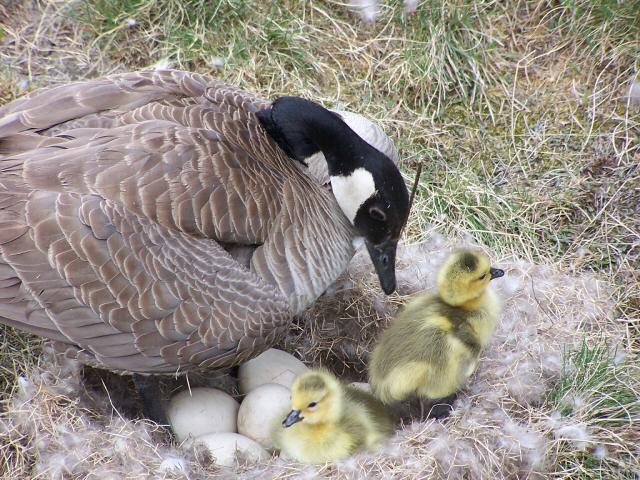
Successful Nesting

A clutch of eggs begins to hatch for a Canada goose nesting at the National Elk Refuge Visitor Center.

An average clutch size for a Canada goose is 2-8 eggs.

Credit: USFWS / Sara Miller, National Elk Refuge volunteer